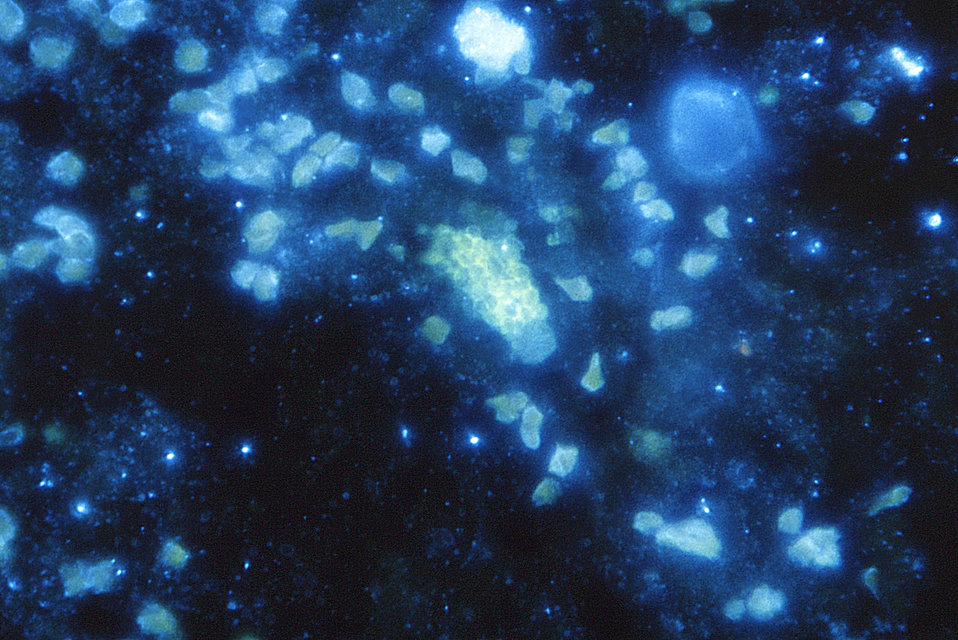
Magnified 562X, this fluorescent antibody-stained photomicrograph reveals the presence of Histoplasma capsulatum antigens in this human lung tissue specimen.